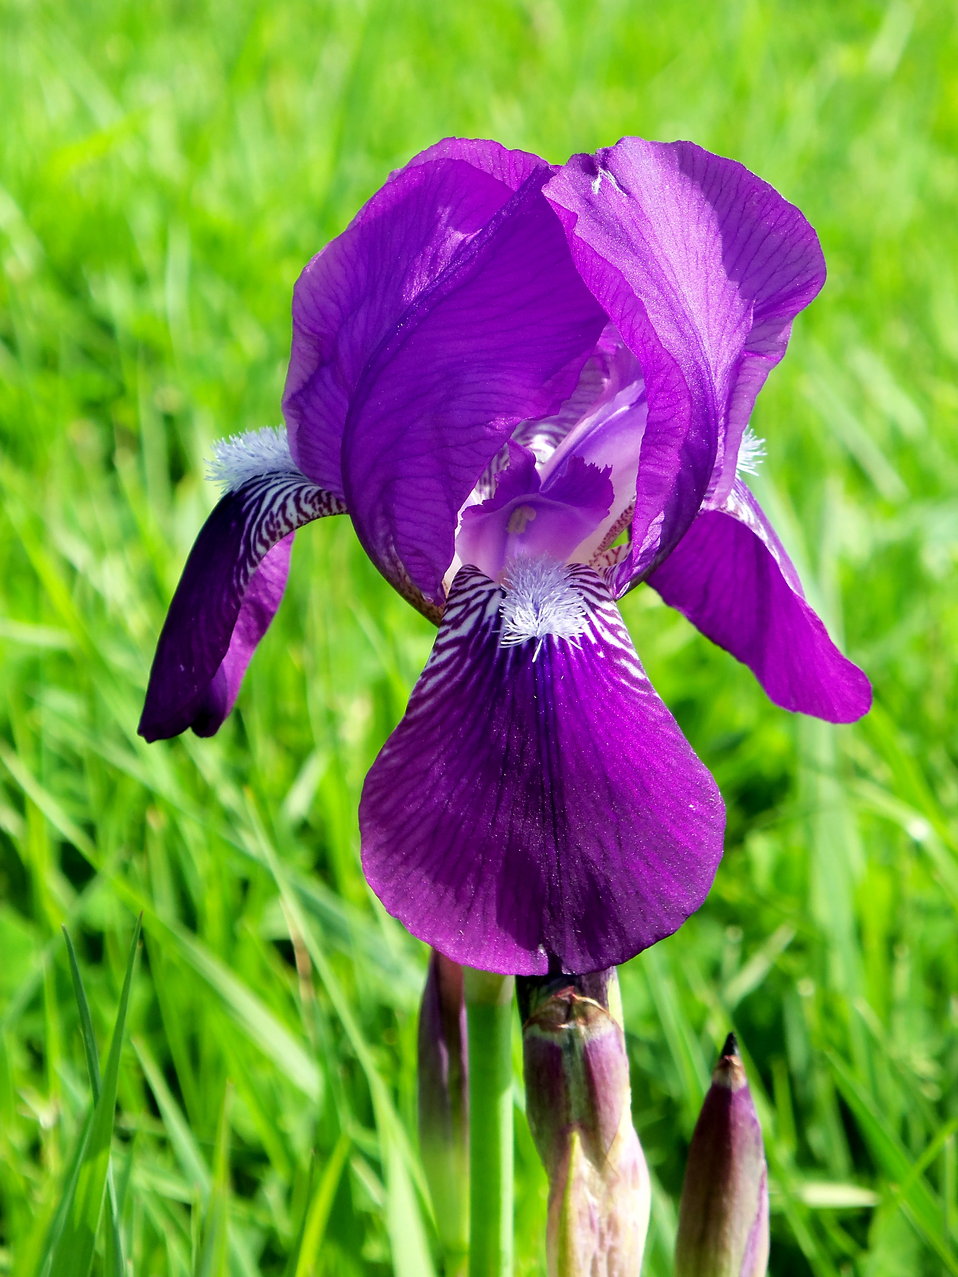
Purple iris seen during a morning sunrise in May 2012 on private property near O'neill, Nebraska.

Photo Credit: Jamie Jones / USFWS

Photo Contest Entry #93